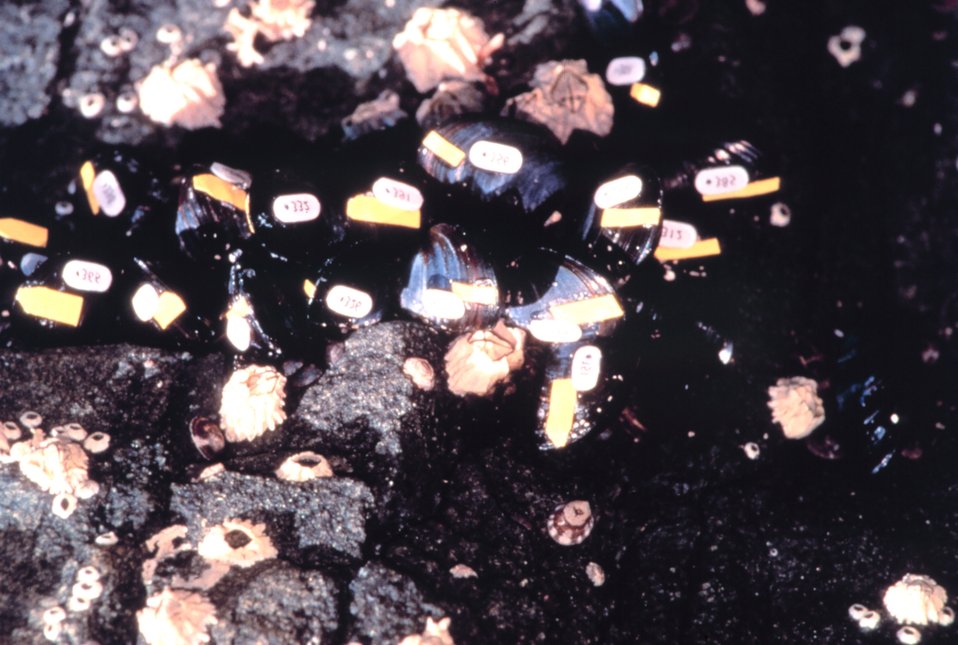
Mussel study area